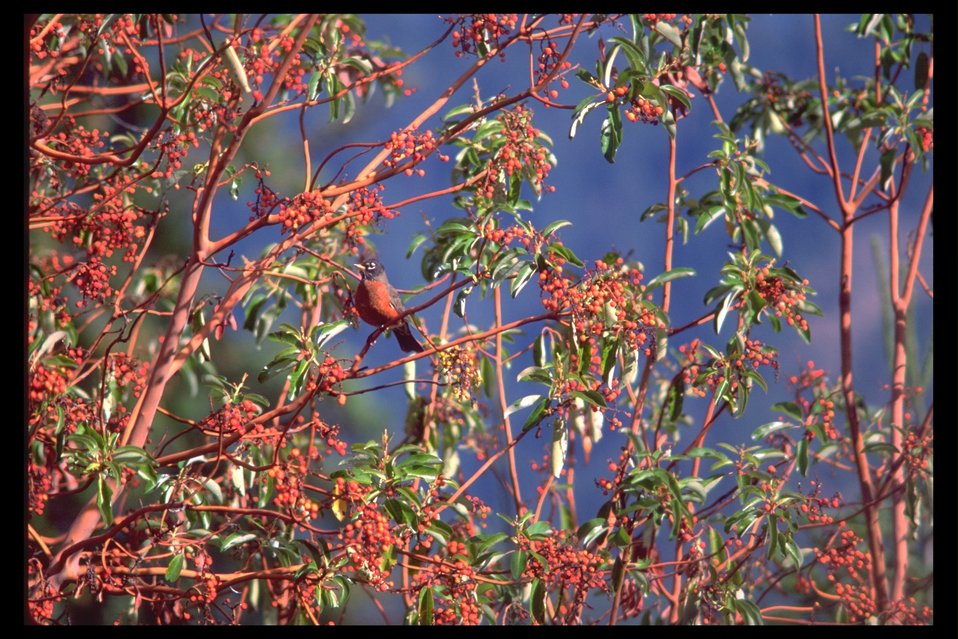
Madrone with robin.